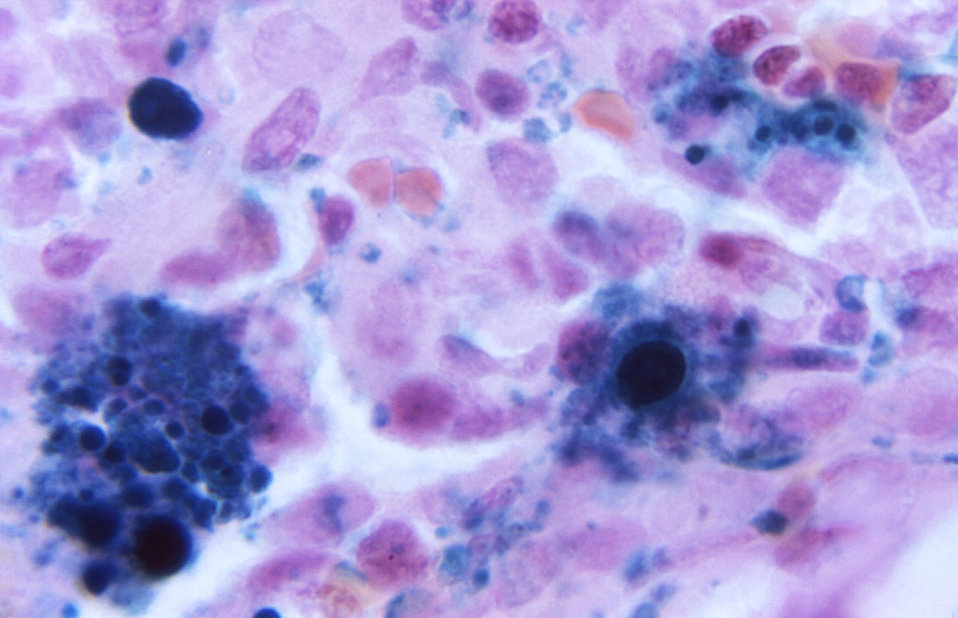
A photomicrograph of bone marrow tissue showing a normal amount of iron stores using Prussian blue staining technique.